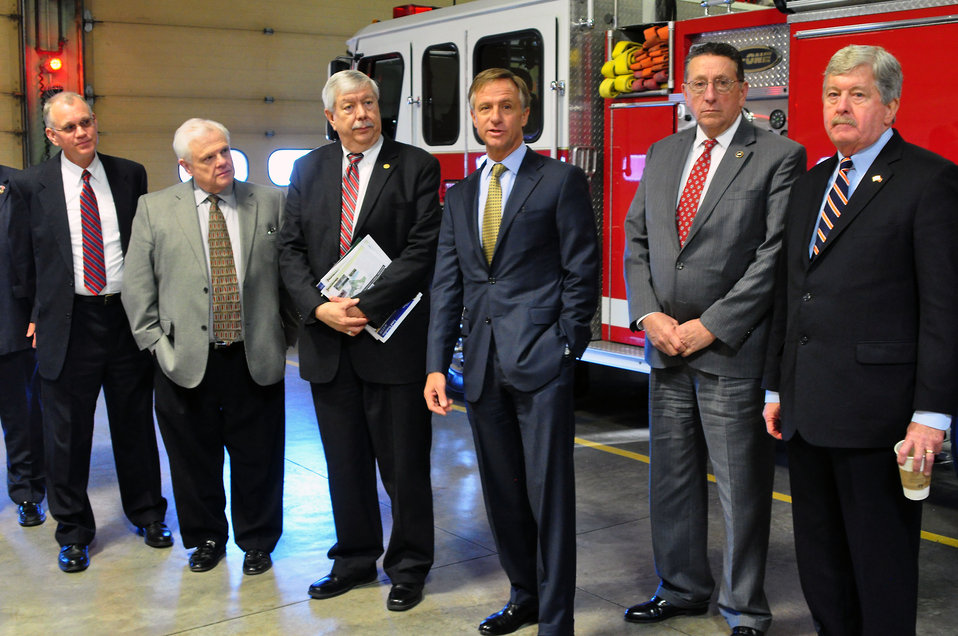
Gov. Bill Haslam Visit to ETTP 2014 Oak Ridge

14-037 DOE photo Lynn Freeny 3-21-2014 Oak Ridge Tennessee